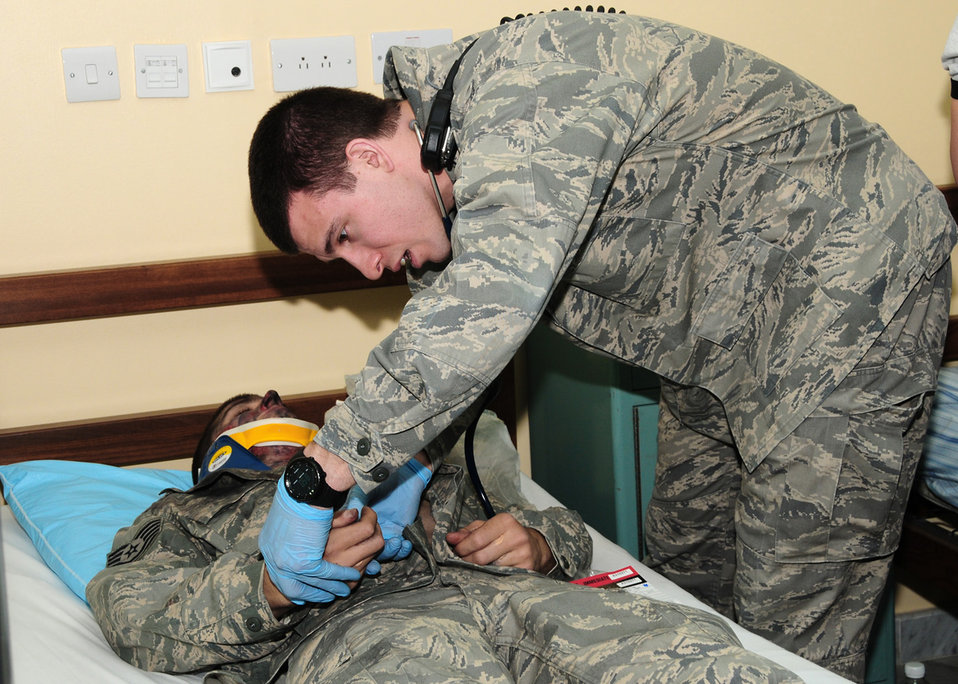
386th AEW conducts dorm fire exercise

Capt. Donald Euler checks the severity of burns a